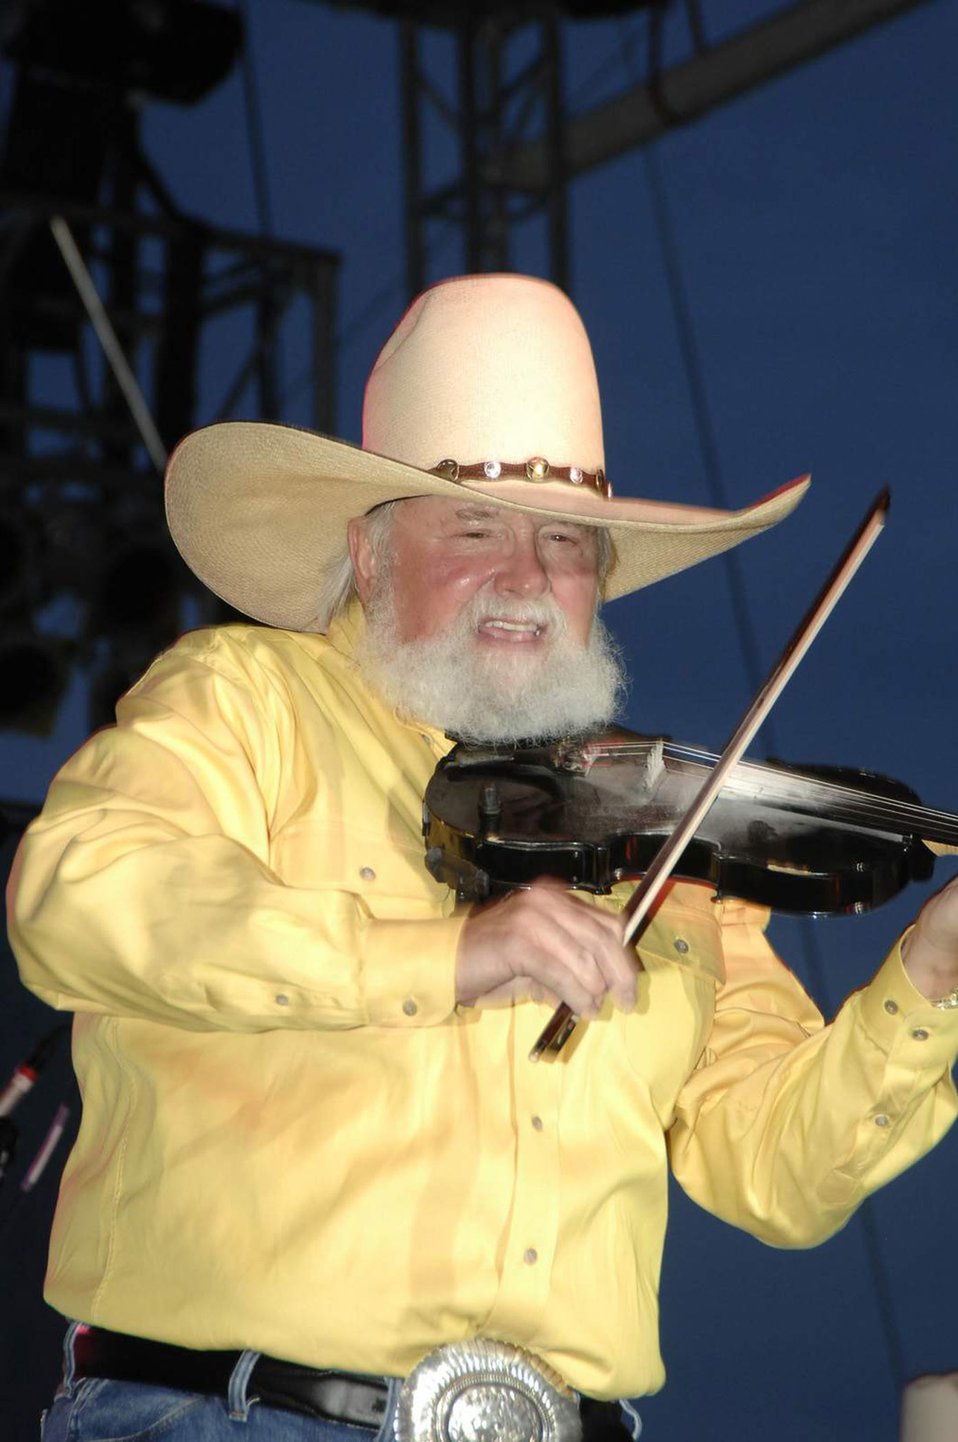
Freedom call

Country music artist Charlie Daniels performs during Freedom's Call Tattoo June 27 on the grounds of the National Museum of the U.S. Air Force in Dayton, Ohio. More than 75,000 peole came out for the event that consisted of aircraft fly overs, food and music by the Air Force Band of Flight, Charlie Daniels Band and local performers.